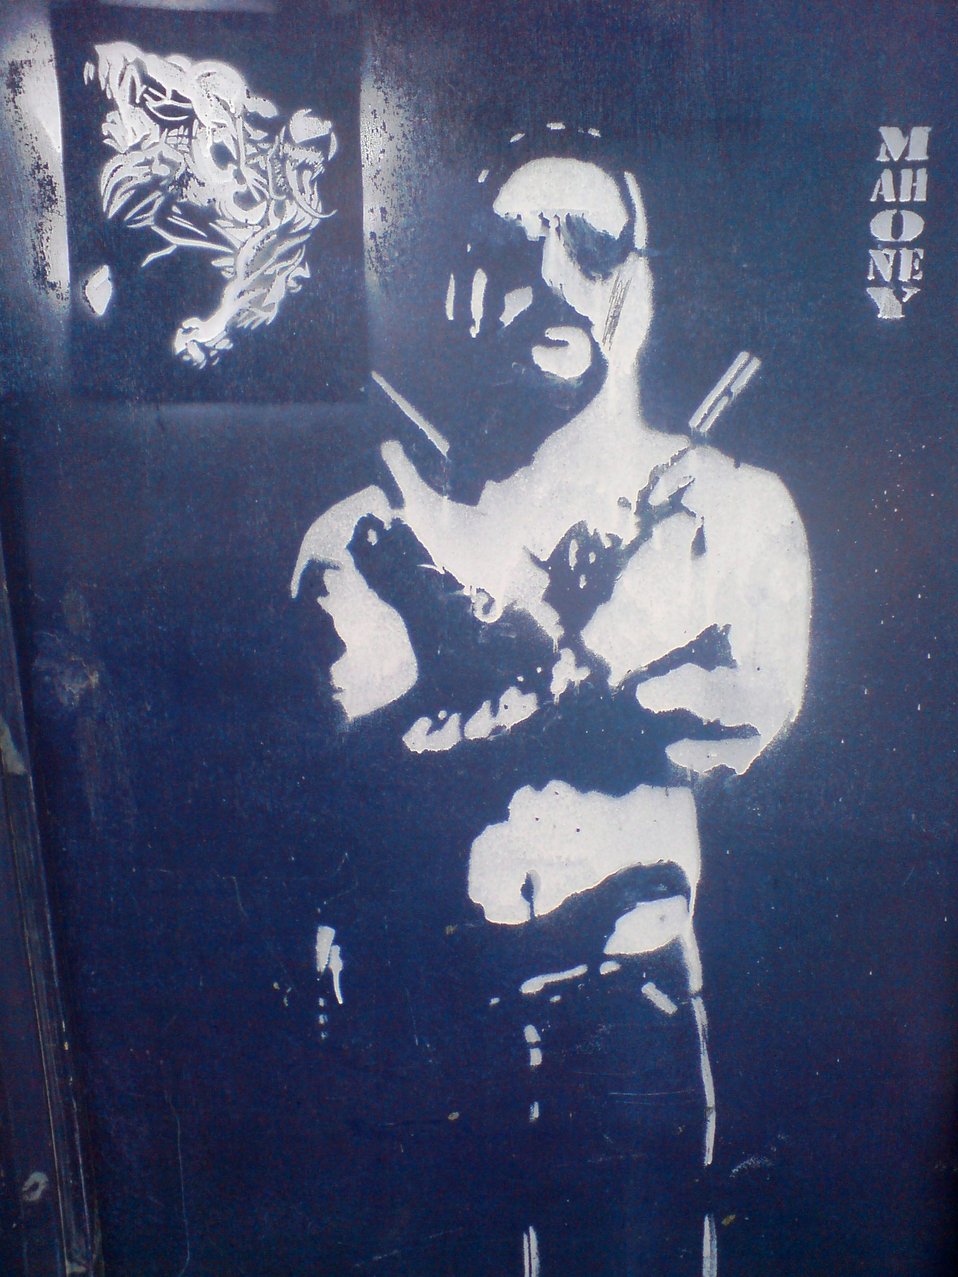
'Man with guns' graffiti, reproducing the poster of Australian movie Chopper with Eric Bana.